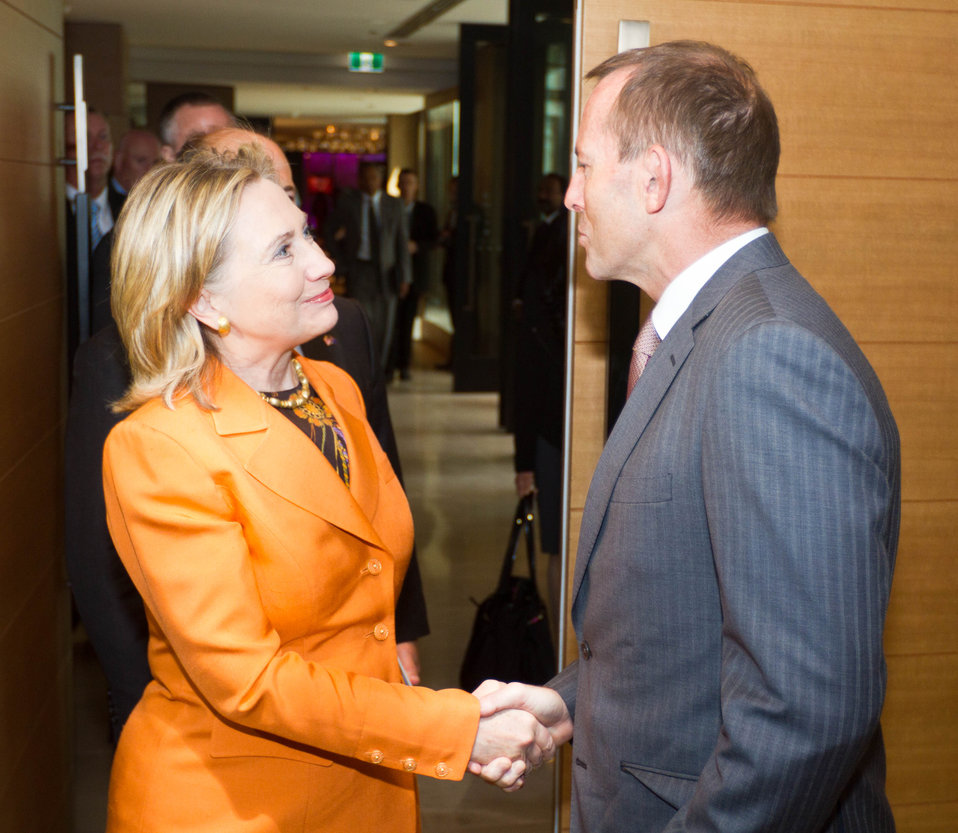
Secretary Clinton Is Greeted By Australian Opposition Leader Abbott

U.S. Secretary of State Hillary Rodham Clinton is greeted by Australian Opposition Leader Tony Abbott in the library at the Grand Hyatt in Melbourne, Australia, on November 7, 2010.